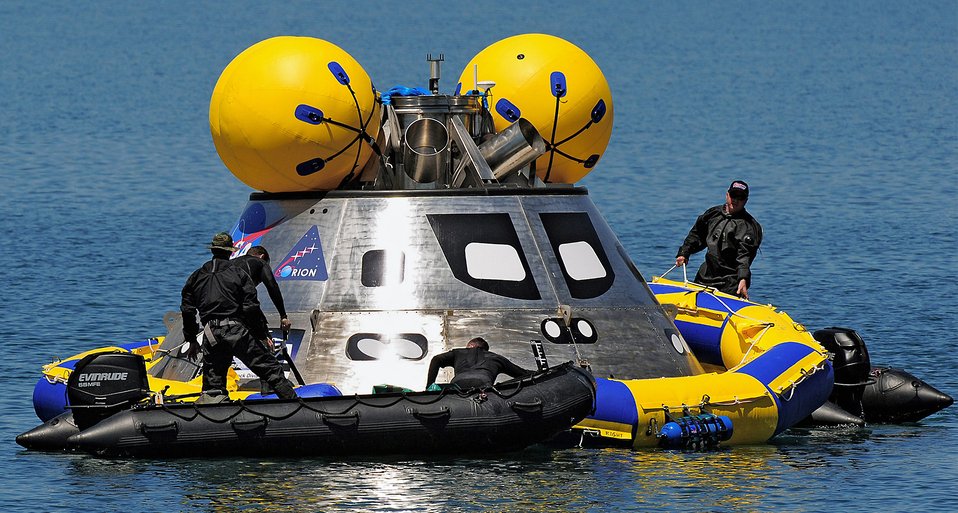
Will it float?

Air Force Reserve Command's 920th Rescue Wing pararescuemen position an inflatable flotation collar around a mockup of the Orion space capsule during recovery testing April 8, 2009, near Cape Canaveral Air Force Station, Fla. The collar stabilizes the capsule after water landing.